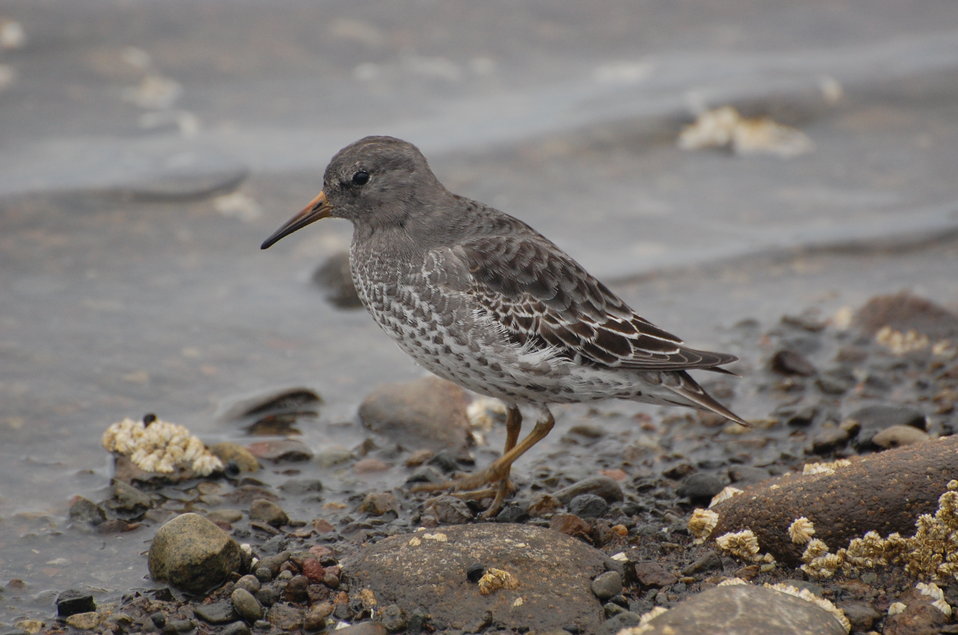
Rock Sandpiper

Winter plumage, Kinzarof Lagoon, Izembek National Wildlife Refuge
Photo by Kristine Sowl,
USFWS, Public Domain